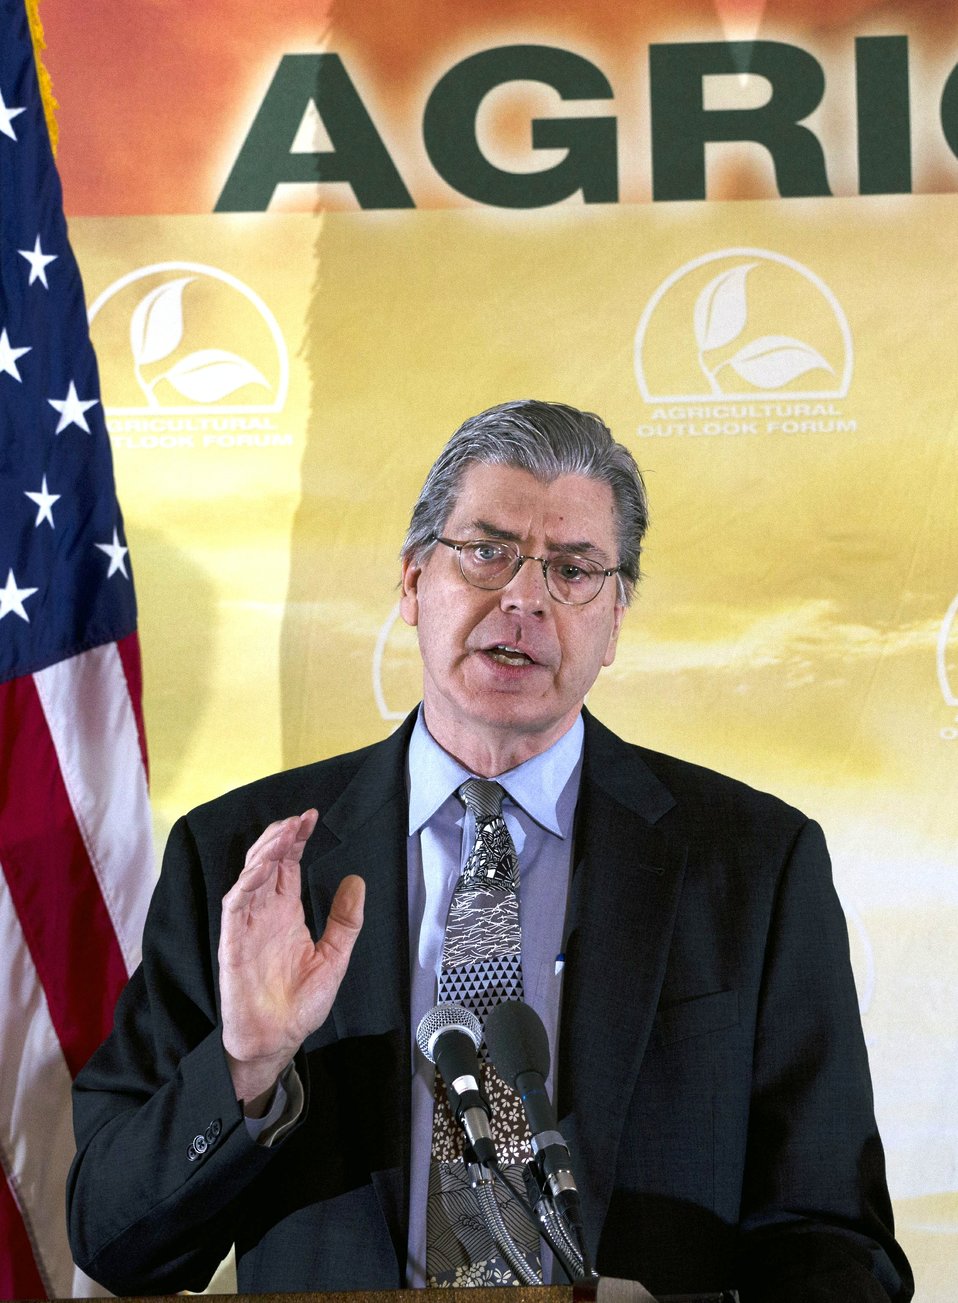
Agriculture Chief Economist Joseph Glauber presents remarks on the 2013 Agricultural Economic and Foreign Trade Outlook at the Opening session of the 2013 Agriculture Outlook Forum, in Crystal City, VA, on Thursday, February 21, 2013.